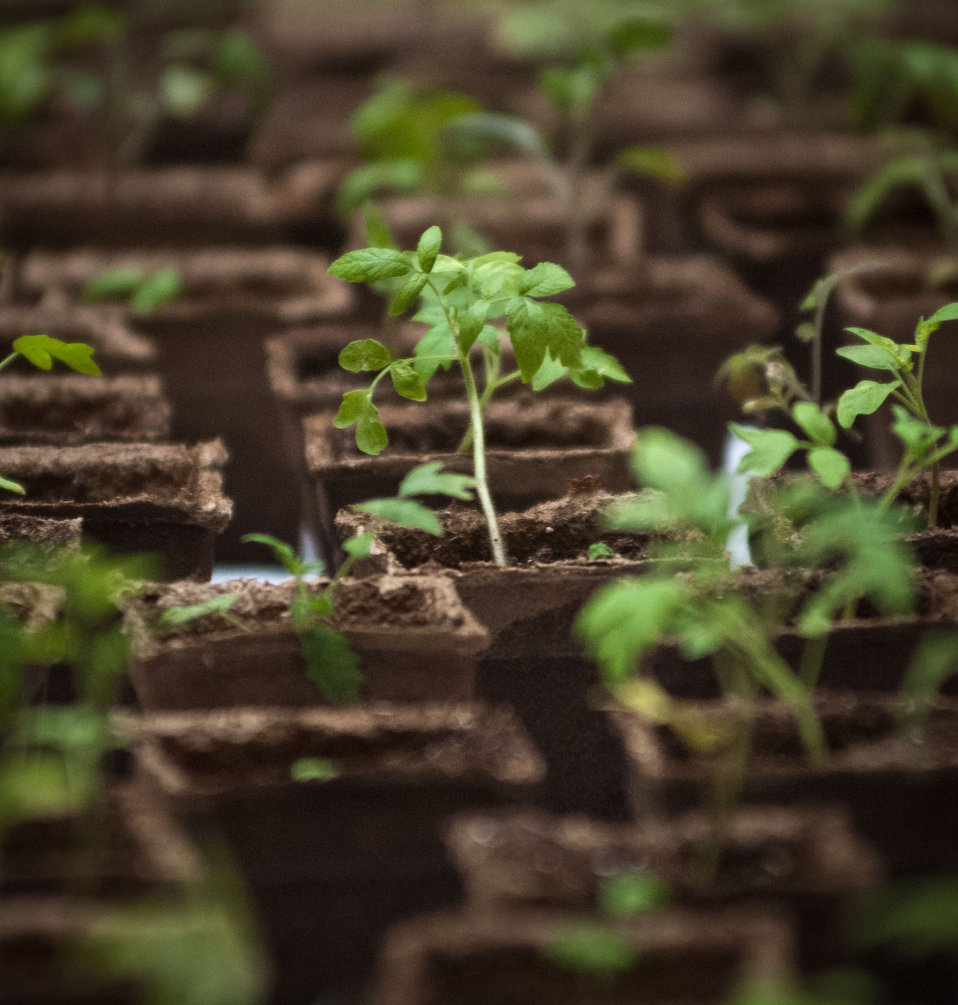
The People’s Garden Initiative and volunteer Executive Master Gardeners distributed ‘Abraham Lincoln” Tomato seedlings that the People’s Garden Initiative is distributing to USDA employees in celebration of the 150th Anniversary of the U.S. Department of Agriculture, on Tuesday, May 15, 2012 in Washington, D.C., on this day, 150 years ago, President Abraham signed the Department into existence during the Civil War. In 1923 the H.W. Buckbee seed company of Rockford, Illinois introduced an heirloom variety named in honor of Illinois’ Greatest Son – Abraham Lincoln. The plant produces large beefsteak tomatoes in about 90 days. Volunteer Executive Master Gardeners planted and cultivated more that 3,000 seedlings ranging in size from one inch to more than a foot tall, so people could choose the best ones to transport home and to stagger the harvest by selecting a small and large seedling. One of the hopes of this event is to share the joys of gardening and harvesting, as well as the opportunity to share your harvest in your community. Seed packets are being distributed to People’s Gardens worldwide.